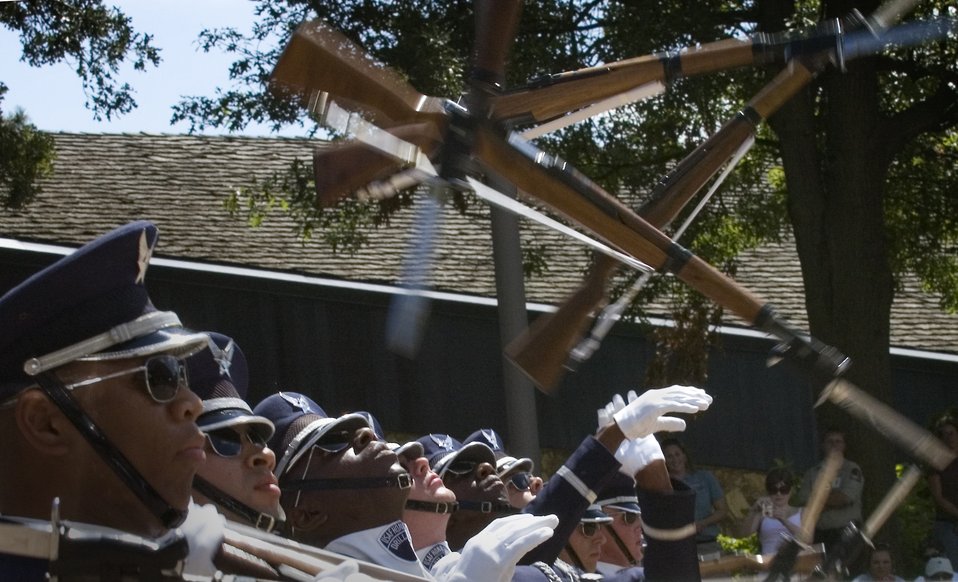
Air Force Week in the Heartland reaches out to Omaha zoo

Air Force Honor Guard drill team members perform Aug. 12 for visitors of the Henry Doorly Zoo in Omaha, Neb. Zoo visitors also had the chance to see the Do Something Amazing display featuring an F-16 Fighting Falcon, a motion simulator and video simulators during Air Force Week in the Heartland.